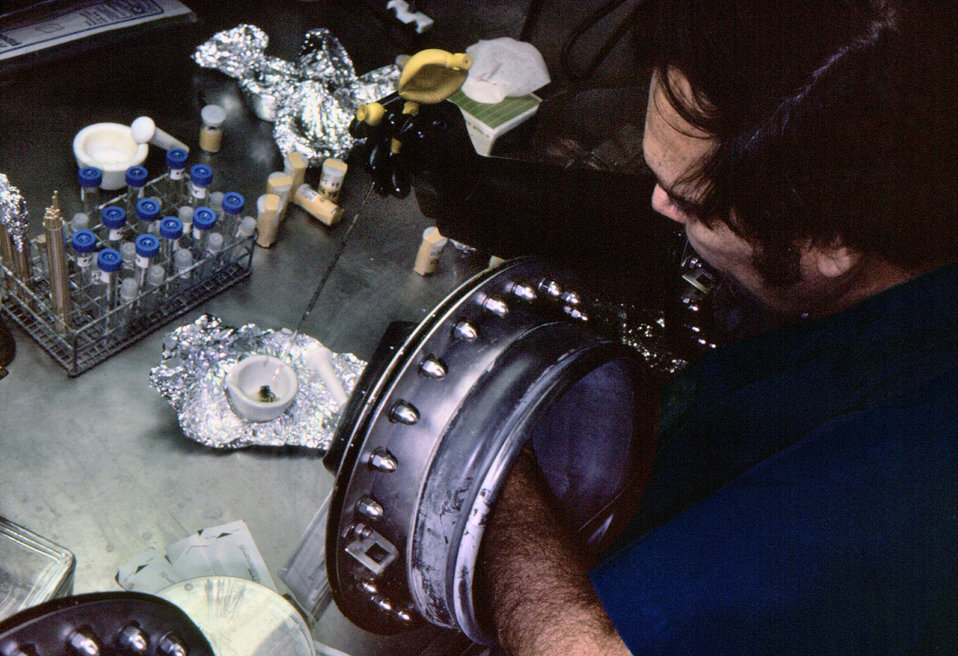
This 1975 photograph showed a CDC laboratory technician working through the gloved portals of a protective 'glove box', and at the time was conducting an investigation in order to determine if a spider had any trace of the Marburg virus.